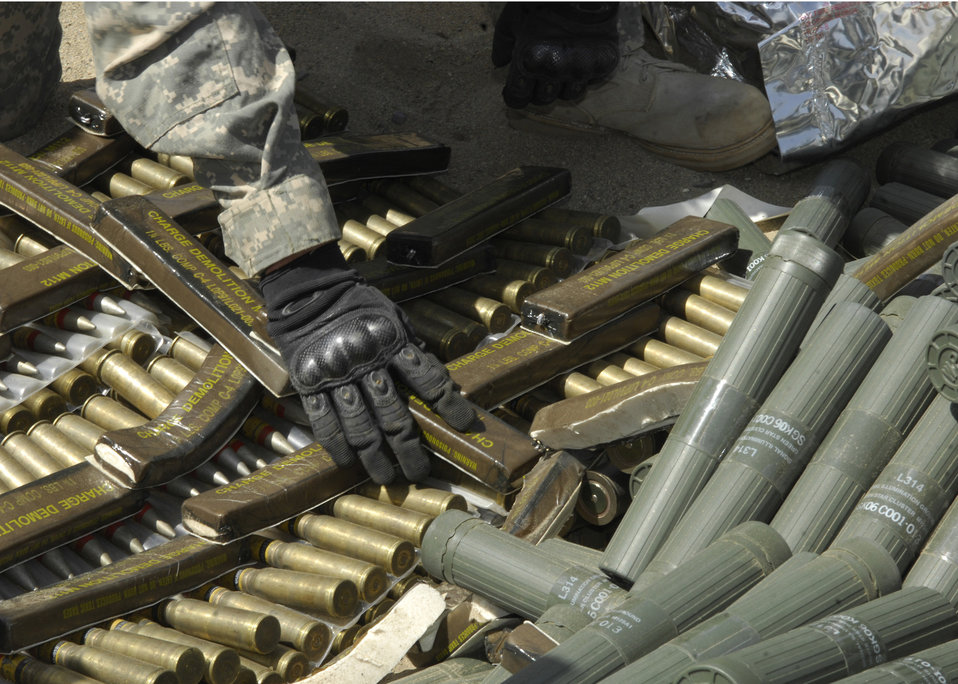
Bagram Airmen destroy explosives, munitions

C-4 explosives are linked on top of several hundred pounds of mixed ordnance, including discarded Soviet munitions from the 1970s at a disposal range several miles away from Bagram Airfield, Afghanistan Aug. 2. The cache of explosives was destroyed by the 755th Air Expeditionary Group.